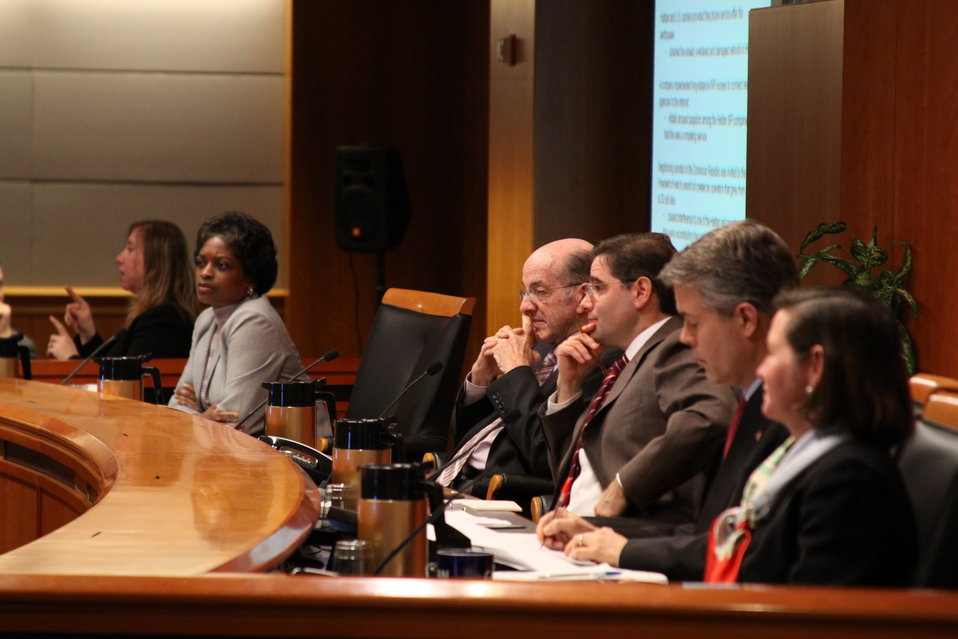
Open Commission Meeting - 2/18/2010

The Federal Communications Commission will hold an Open Meeting in Washington, DC. on February 18, 2010, which will include the following items:

E-Rate: An Order and Notice of Proposed Rulemaking to enable schools that receive funding from the E-Rate program to allow members of the general public to use the schools' Internet access during non-operating hours at no additional cost to the Universal Service Fund. This order and notice do not permit or require any changes to E-Rate applications due on February 11, 2010; Ex Parte Reform: A Notice of Proposed Rulemaking to improve the transparency and effectiveness of the FCC's decision-making process by reforming the ex parte rules; Procedural Reform: A Notice of Proposed Rulemaking to enhance the efficiency, openness, and transparency of the Commission's proceedings by improving and modernizing certain organizational and procedural rules; National Broadband Plan Status Report: Commission staff will report on the status of the National Broadband Plan, providing a framework for the national purposes portion of the Plan.